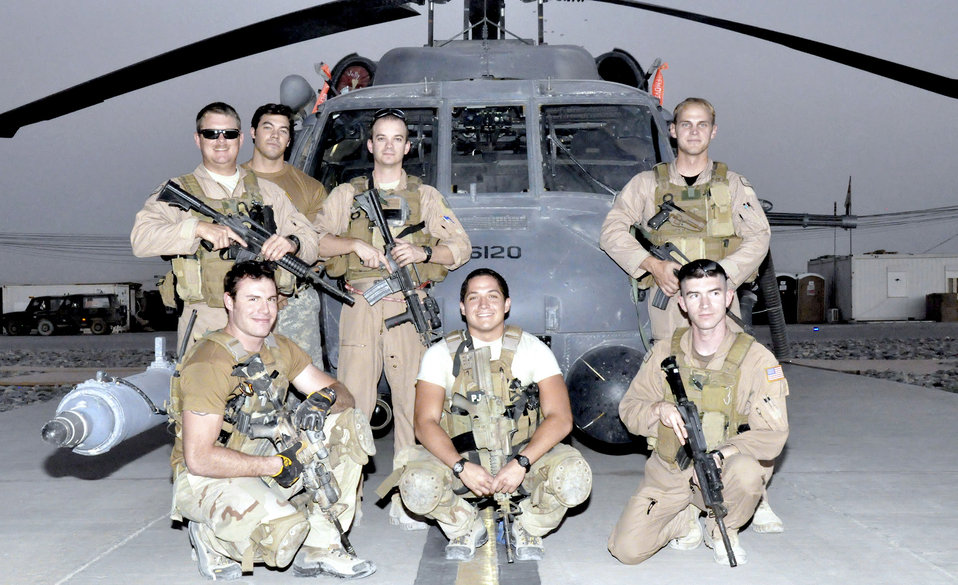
33rd Rescue Squadron crew earns MacKay Trophy

The crew of